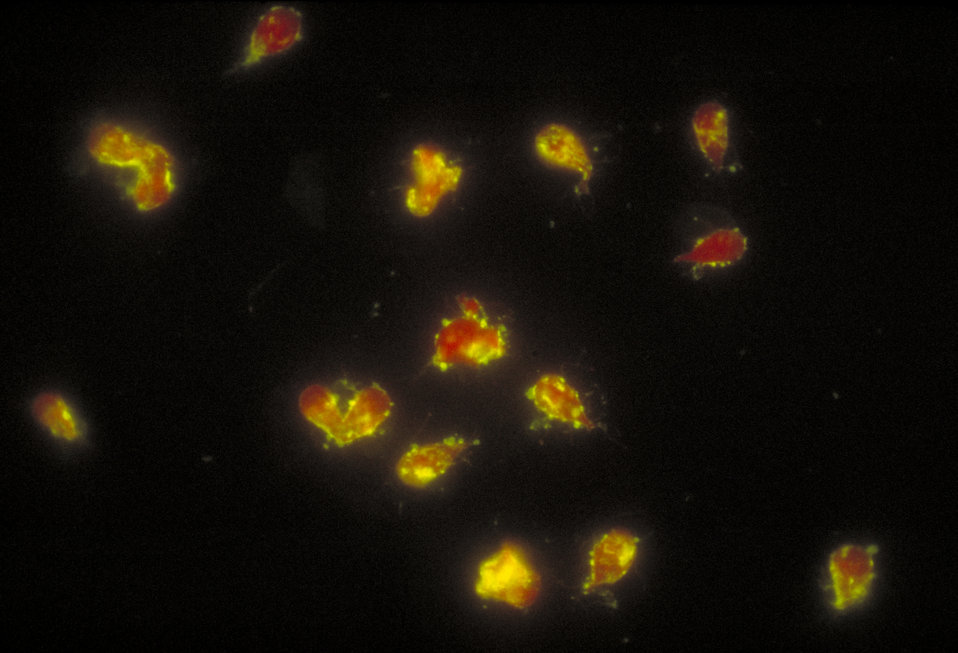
This photomicrograph depicts a positive indirect fluorescent antibody (IFA) test for Giardia lamblia parasites.